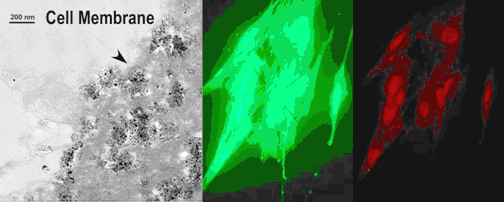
Cells Selectively Absorb Short Nanotubes

Nanotube length threshold: NIST experiments using human lung cells demonstrate that DNA-wrapped single-walled carbon nanotubes longer than about 200 nanometers are excluded from cells, while shorter lengths are able to penetrate the cell interior (dark lines in the fluorescence image.)